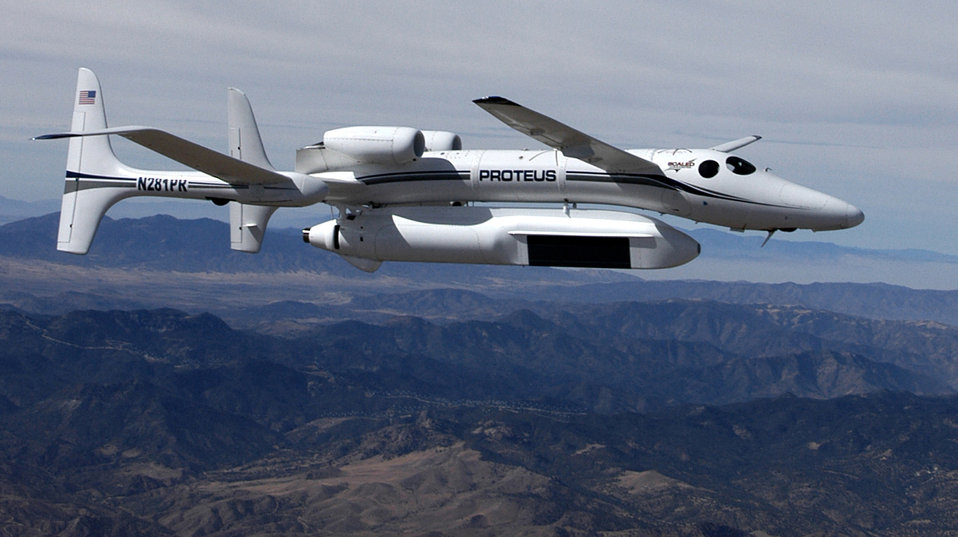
My eyes on are on you

A Proteus aircraft flies over Southern California carrying the Global Hawk variant of the new Multi-platform Radar Technology Insertion Program radar. The completion of Radar System Level Performance Verification on two modes is a key flight milestone for the program. The 851st Electronic Systems Group officials aim to turn the sensor over to the Global Hawk Air Force 18, the service's Block 40 test bed.